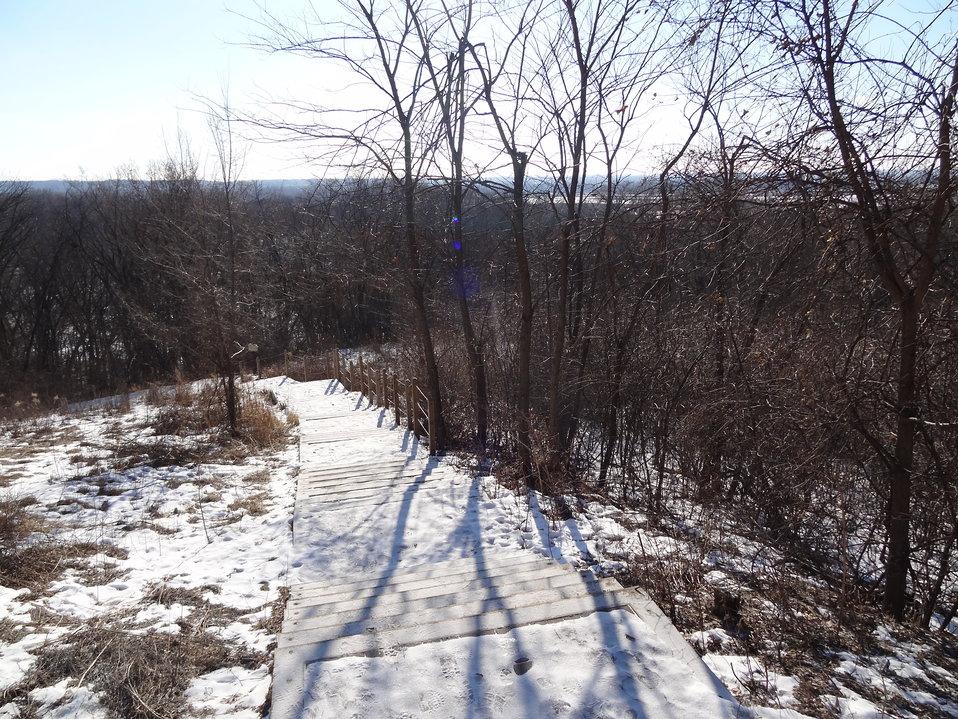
Trees and Brush

Before: Trees and brush along the steps on the Hillside Trail.